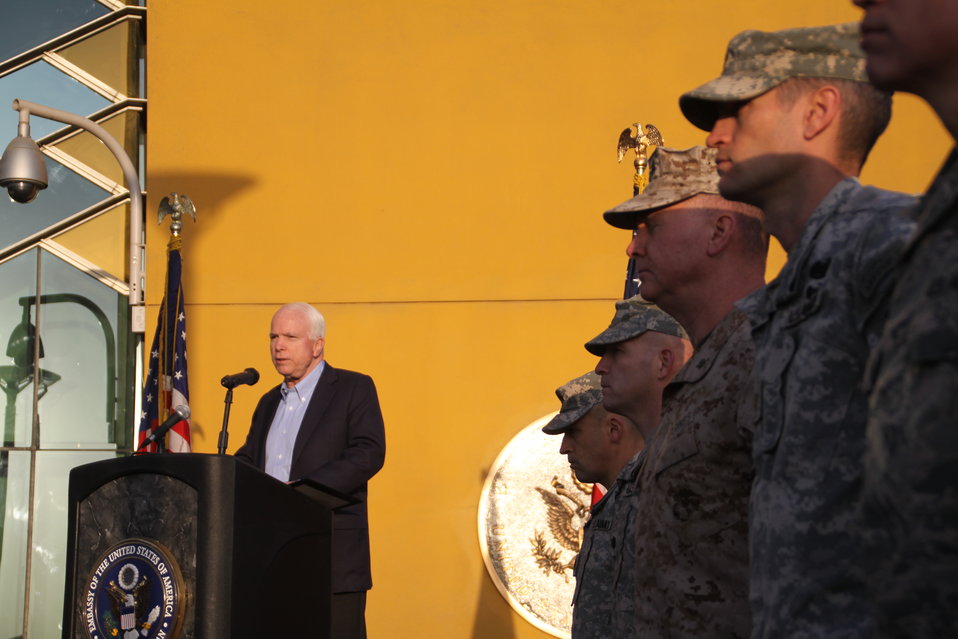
Senator McCain